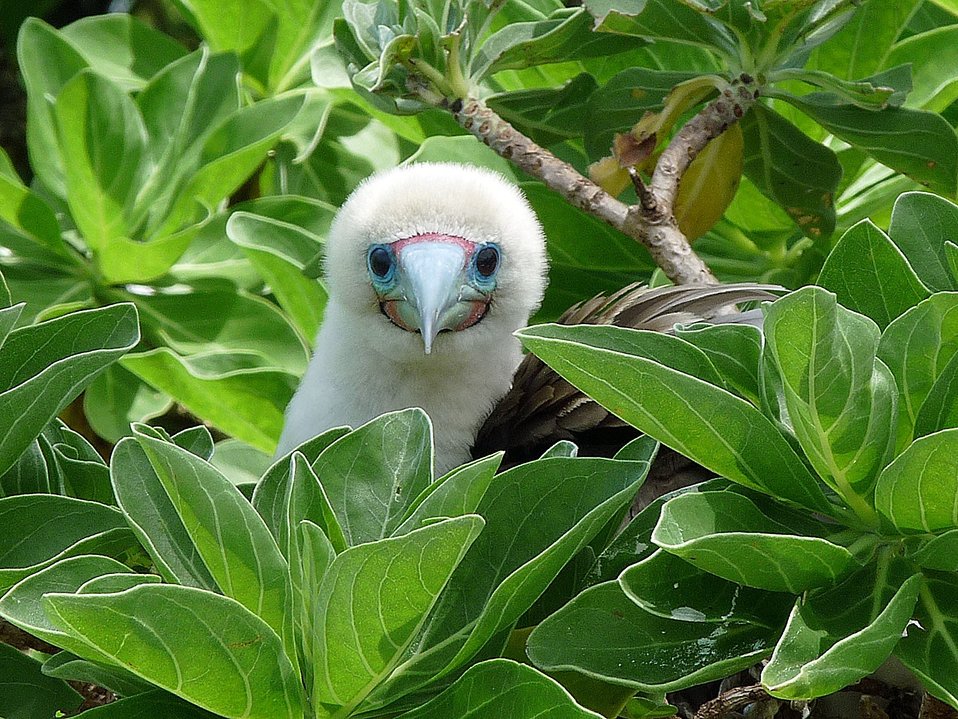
Red-footed Booby

Palmyra Atoll National Wildlife Refuge, Pacific Islands
(Photo: Laura Beauregard, USFWS)

Conserving the Future - In July, 2011, thousands of Service employees, partners of the Service and wildlife enthusiasts gathered in Madison, WI for the 'Conserving the Future' conference that outlined a new, decade-long conservation plan for wildlife.